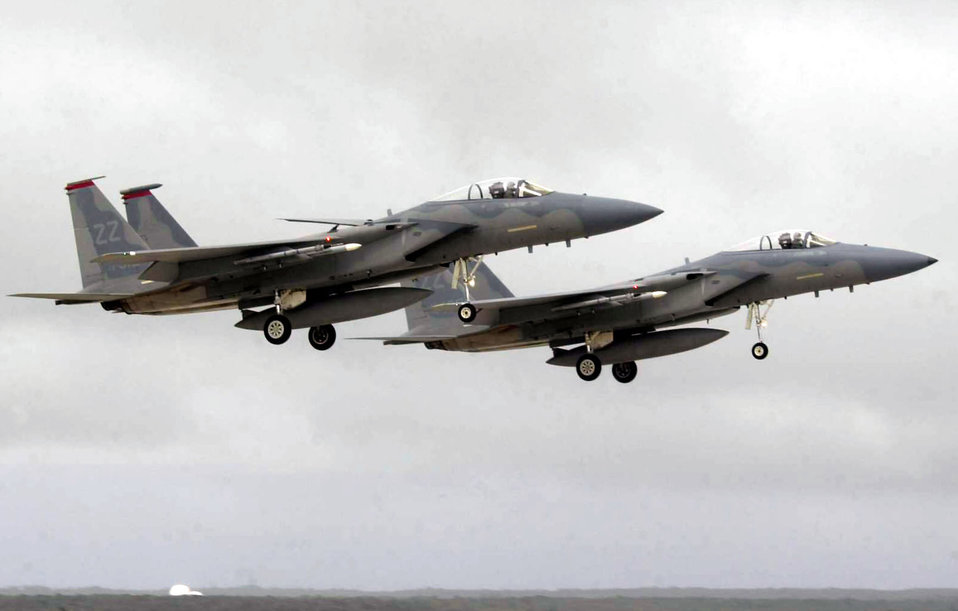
Exercise Cope North

ANDERSEN AIR FORCE BASE, Guam -- A pair of F-15 Eagles from the 67th Fighter Squadron at Kadena Air Base, Japan, return here after an exercise Cope North mission.